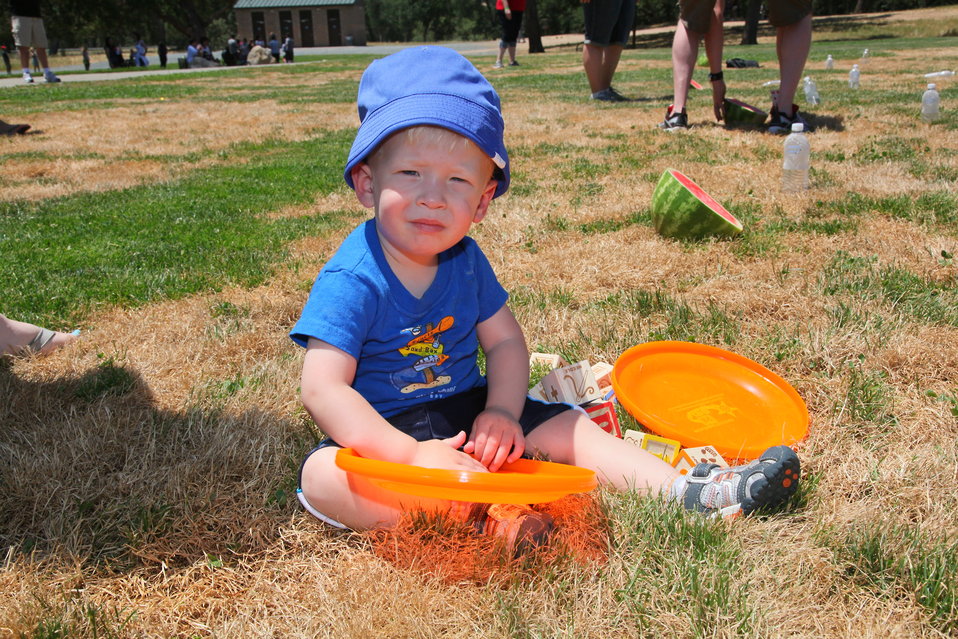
2011 Annual Picnic